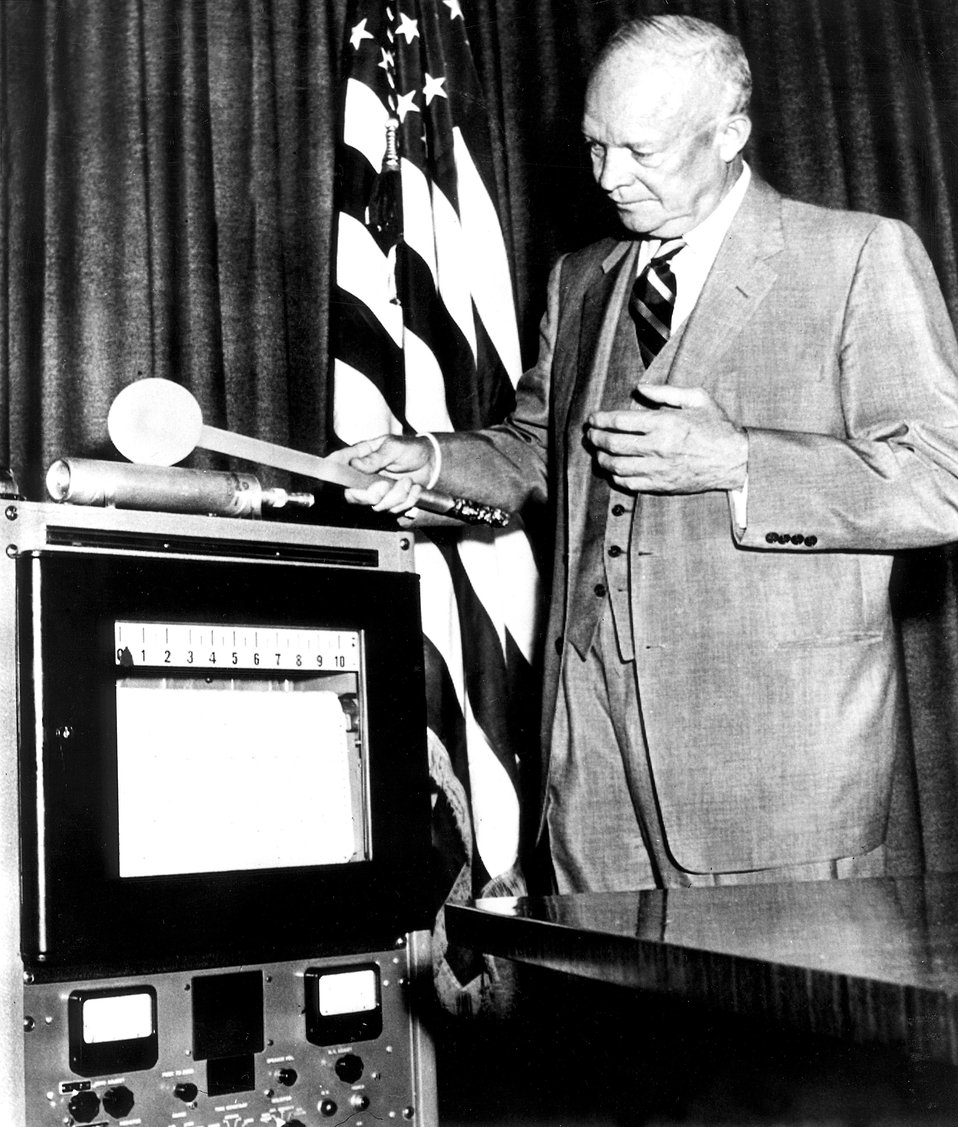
President Dwight D. Eisenhower is shown here with the special atomic 'fission' rod he used from here on Sept. 6, 1954, to break ground by remote control for the world's first full-scale atomic-electric generating station exclusively for civilian needs at Shippingport, Pa.